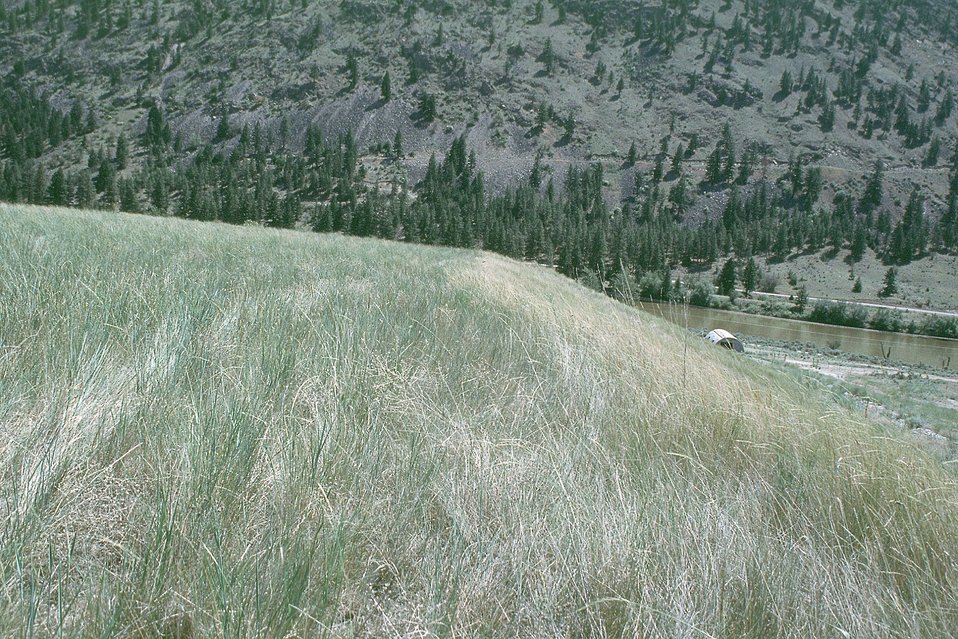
AML Kaaba-Texas Mine Repository, Spokane District, Washington.